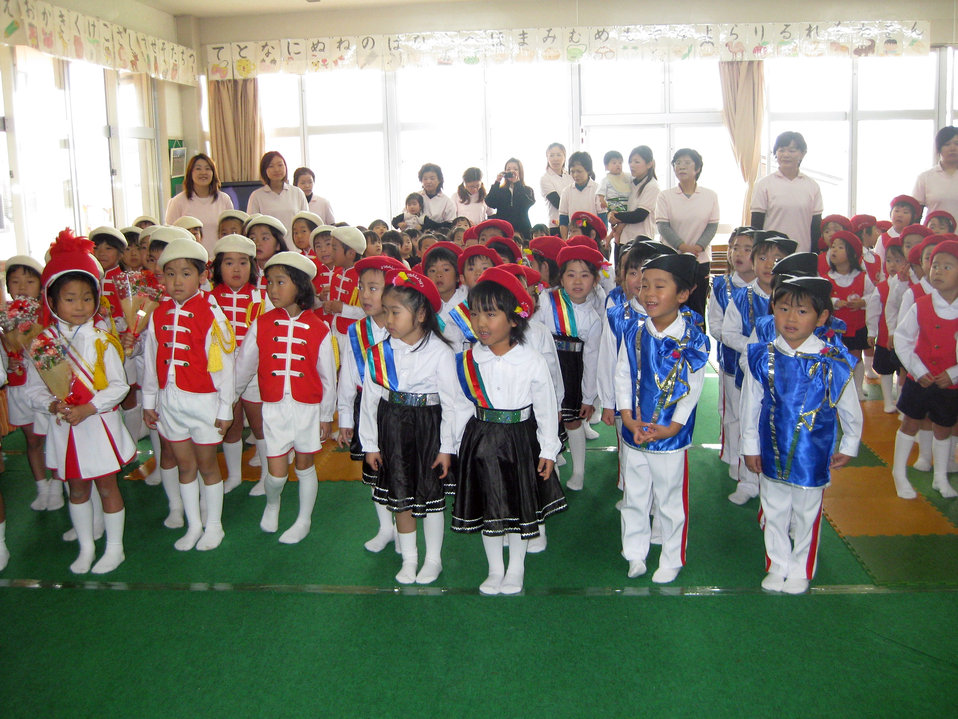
Kadena Airmen volunteer time to Japanese children

Airmen from Kadena Air Base, Japan, watch 60 children perform Feb. 26 at Isshin preschool in Miyazaki Prefecture, Japan.